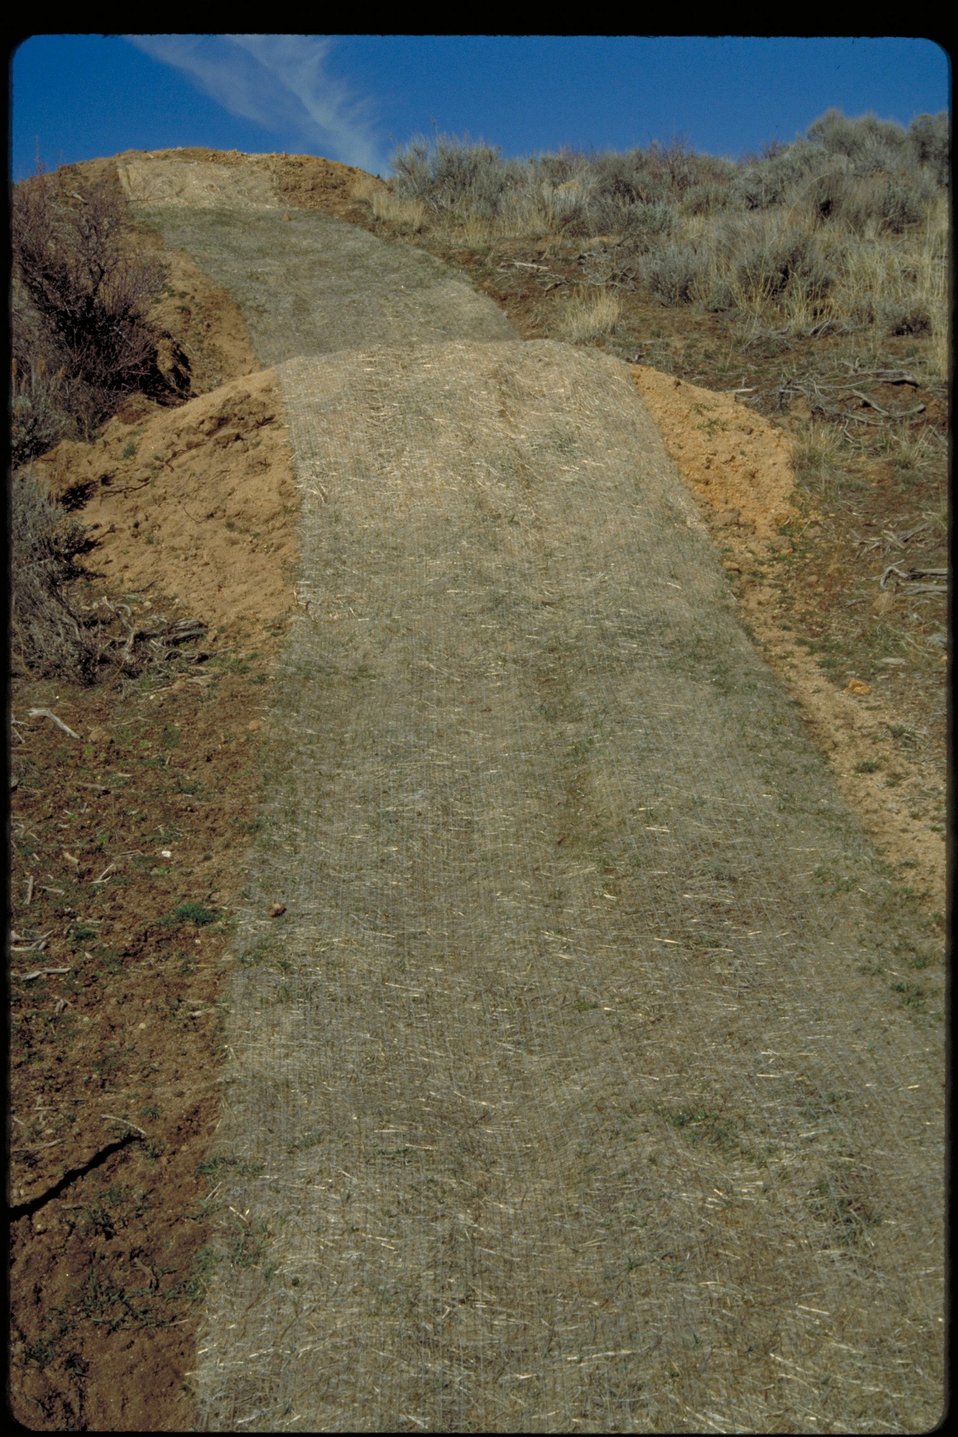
Erosion Control Boise Front Four Rivers Field Office LSRD Lower Snake River District